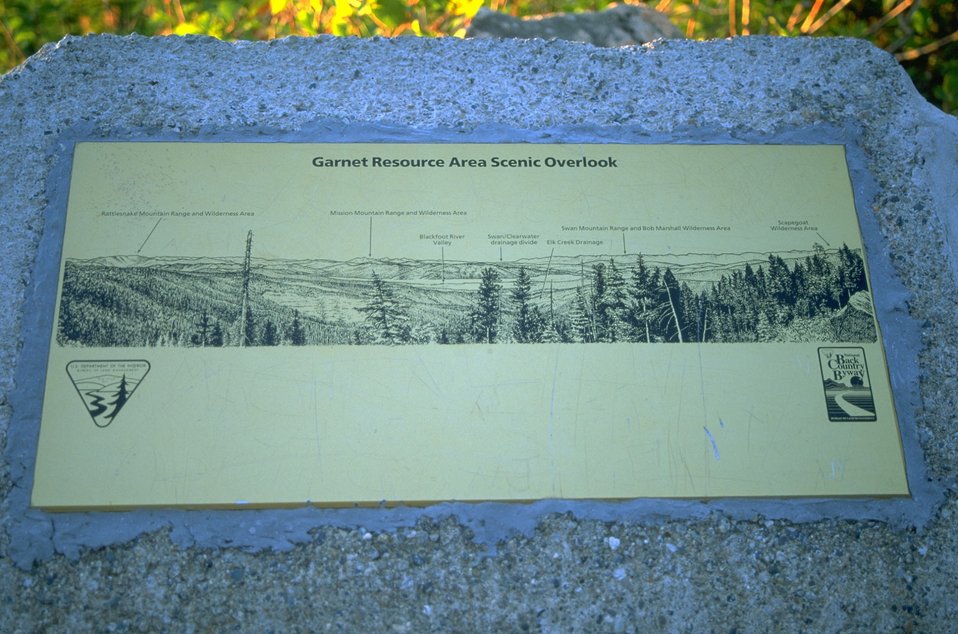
Garnet Back Country Byway interpretive panel at overlook